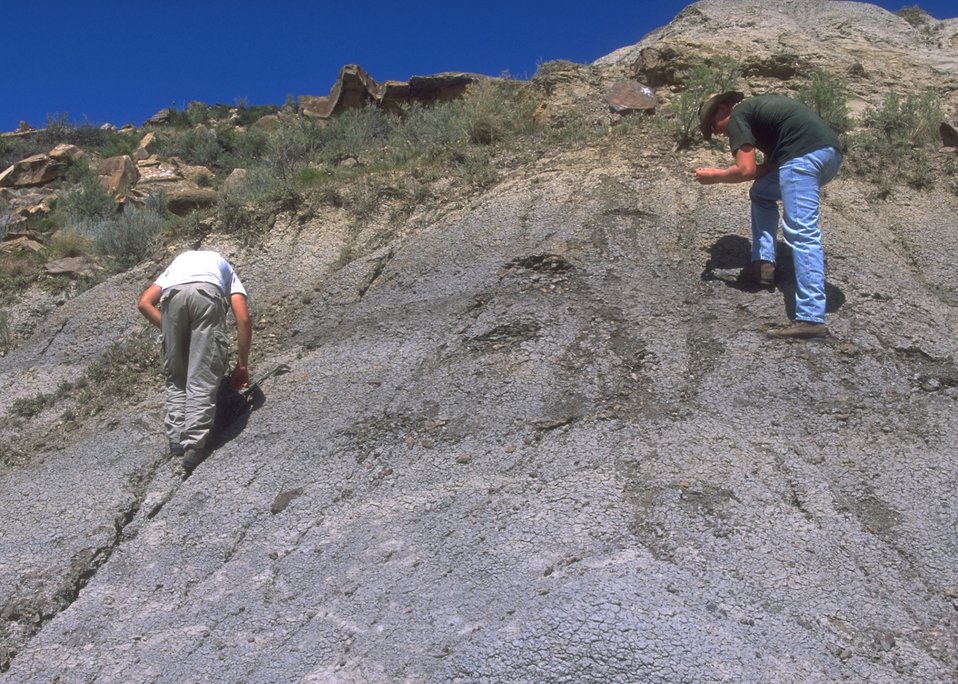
Paleontologists doing a survey for evidence of fossils, Lance Creek Fossil Area, Newcastle Field Office.